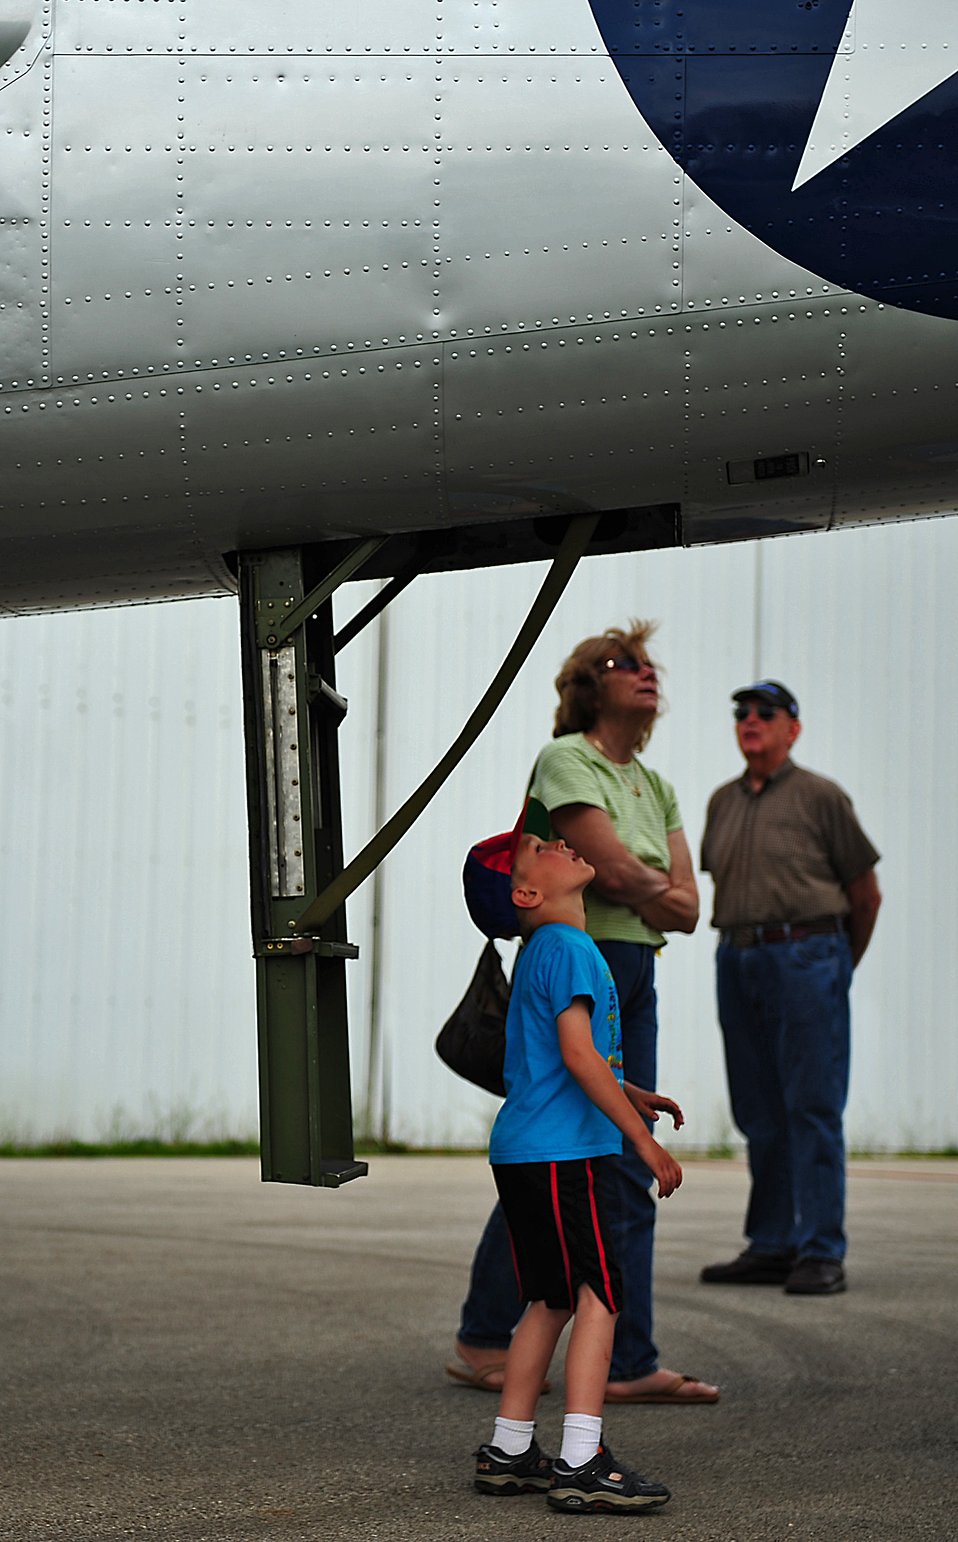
68th Doolittle Raiders Reunion

The public get a closer look at a B-25 Mitchell Bomber at Grimes Field, Ohio, April 15, 2010, as B-25 crews arrive to participate in commemoration flights for the Doolittle Raiders' 68th reunion at Wright Patterson Air Force Base, Ohio. The event commemorates the anniversary of the Doolittle Tokyo Raid. On April 18, 1942, U.S. Army Air Forces Lt. Col. Jimmy Doolittle's squad of 16 B-25s bombed targets over Japan in response to the Japanese attack on Pearl Harbor. (U.S. Air Force photo/Tech. Sgt. Jacob N. Bailey)

The Doolittle Raiders? 68th reunion commemorates the anniversary of the Doolittle Tokyo Raid on April 18th, 1942, when U.S. Army Air Forces Lt. Col. Jimmy Doolittle?s squad of 16 B-25s bombed targets in response to the Japanese attack on Pearl Harbor.